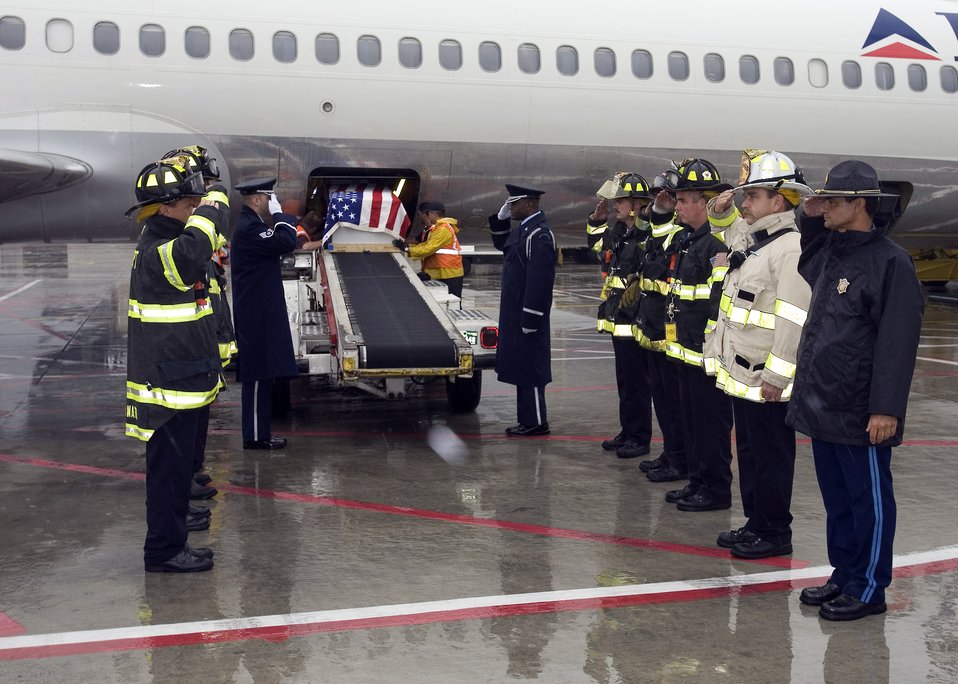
Airman missing 28 years comes home

Patriot Honor Guard Staff Sergeants Philip Pelletier (left and nearest to the airplane ramp) and Lucien Blake render salutes as the remains of Staff Sgt. Donald Michaud are lowered from a Delta Airlines jet July 18 at Logan International Airport in Boston. Sergeant Michaud along with two other individuals went scuba diving on Sept. 9, 1978, in Vouliagmeni Lake near Vouliagmenis Point, Greece, and failed to return. An unsuccessful search effort was launched and two weeks later, a presumptive finding of death was declared. In the fall of 2006, a local Greek diving association located wetsuits, diving equipment and human remains believed to be those of the missing individuals. The Armed Forces DNA Identification Laboratory, confirmed the identification of the three missing Americans. Joining the sergeants are members of the Logan Airport Fire Department and a member of the Massachusetts State Police.